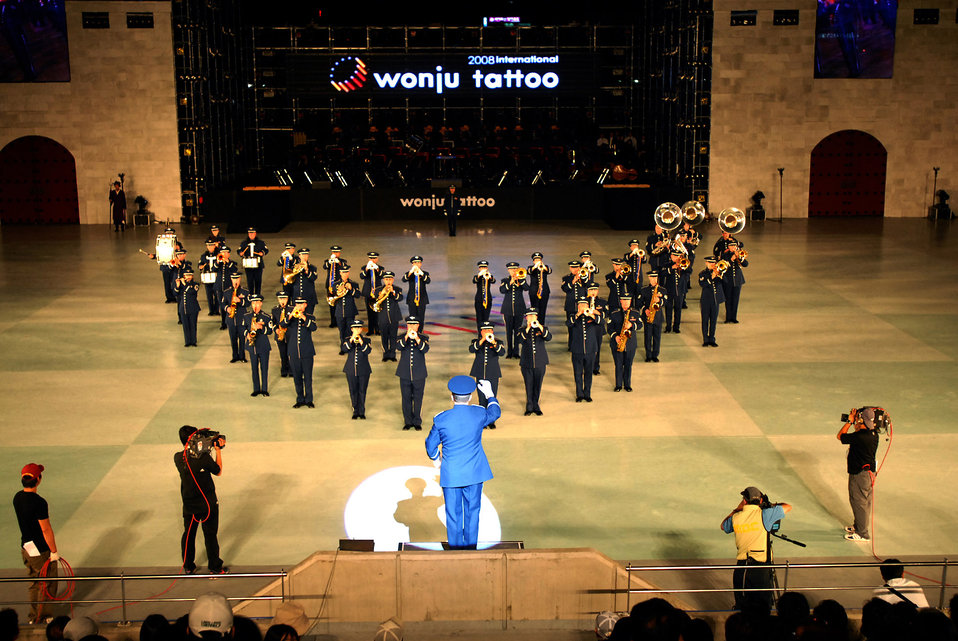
International tattoo drums up excitement

Members of the Air Force Total Force Band perform at the 2008 International Tattoo Sept. 5 in Wonju, South Korea. The band was formed with regional band members from commands worldwide.